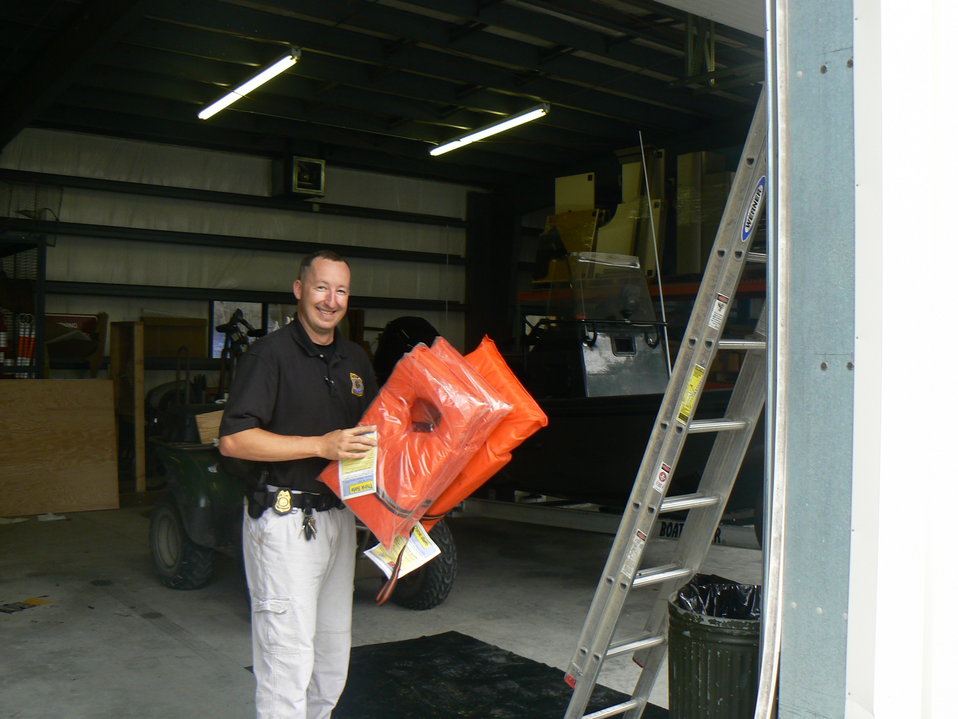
Hurricane preparation at Chincoteague NWR, VA

Refuge staff gathering items to be placed in the hurricane or emergency repose trailer for use during Hurricane Irene.